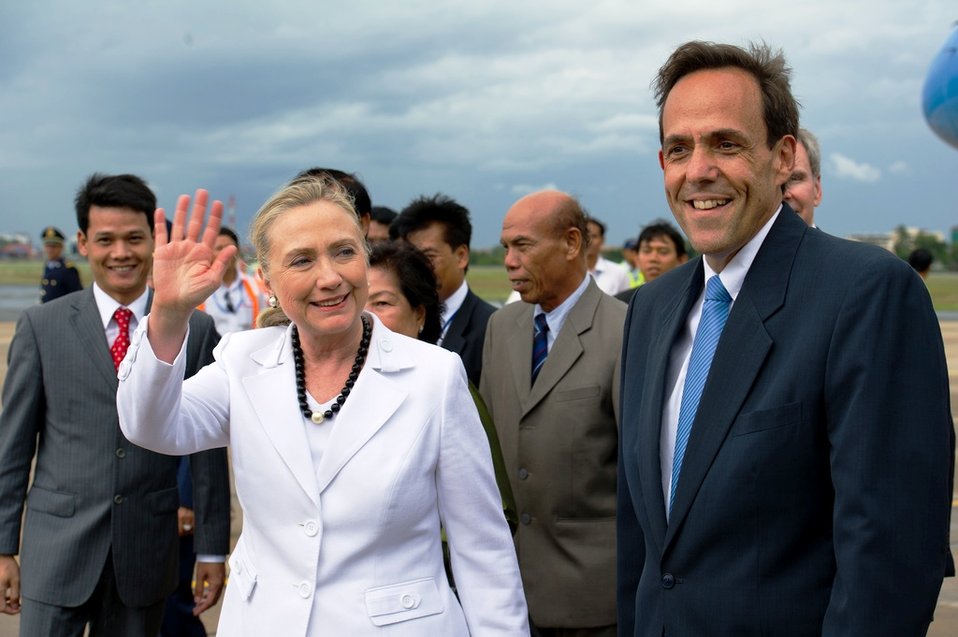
Secretary Clinton Waves Upon Arriving in Phnom Penh

U.S. Secretary of State Hillary Rodham Clinton, with U.S. Ambassador to Cambodia William Todd, waves upon her arrival in Phnom Penh, Cambodia, on July 11, 2012.